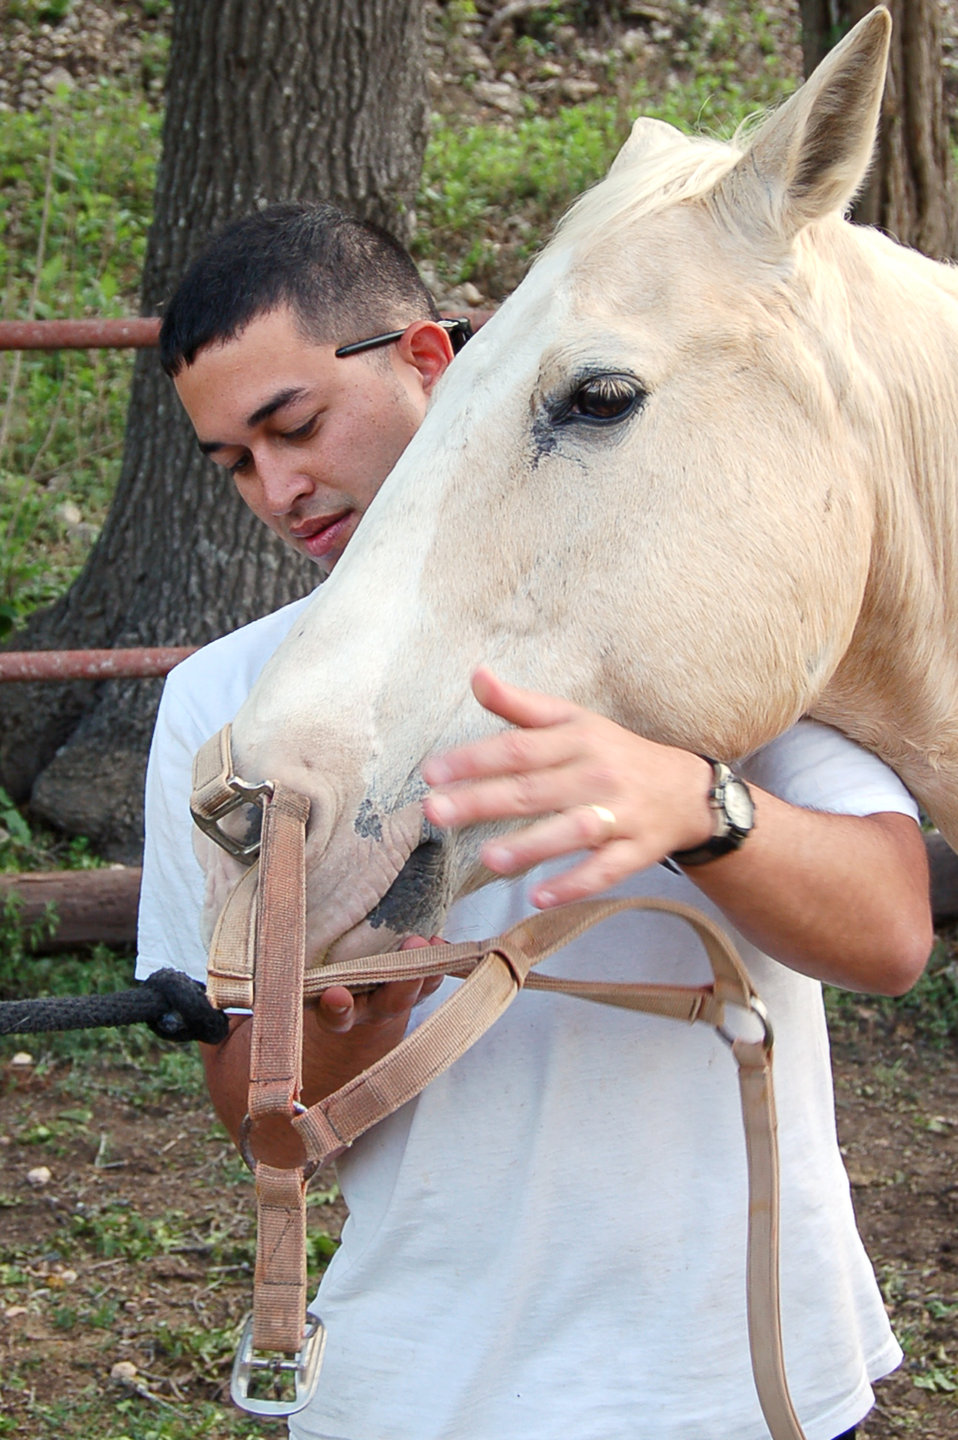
Retreat reconnects couples

Staff Sgt. Jerry Desrochers puts a bridle on a horse at the Heart of the Hills Camp in Hunt, Texas, on Saturday, April 22, 2006. The fuels specialist from the 4th Logistics Readiness Squadron at Seymour Johnson Air Force Base, N.C., attended a retreat with his wife, hosted by the Military, Veteran and Family Assistance Foundation. The retreat helps couples reconnect after the military spouse returns from a deployment.